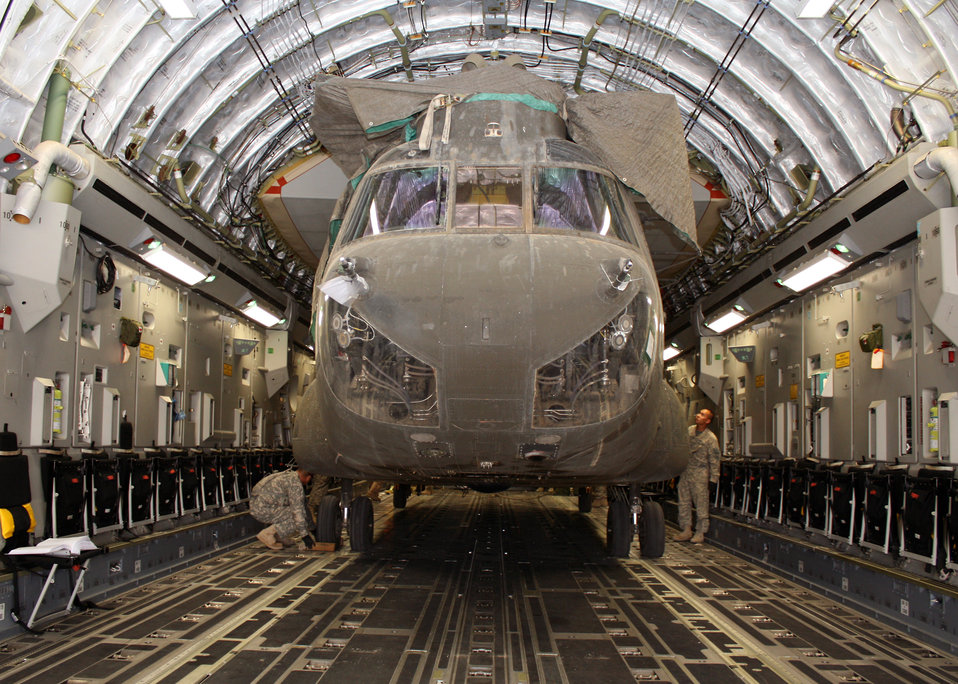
Balad Airmen move helicopters

Army Capt. Stephen Lee inspects an Army CH-47 Chinook helicopter after it is loaded into a C-17 Globemaster III July 13, 2010, at Joint Base Balad, Iraq. Ensuring the helicopter stays in place during travel is crucial for both the aircraft's safety and those onboard. Captain Lee is the 209th Aviation Support Battalion strategic air load officer in charge.